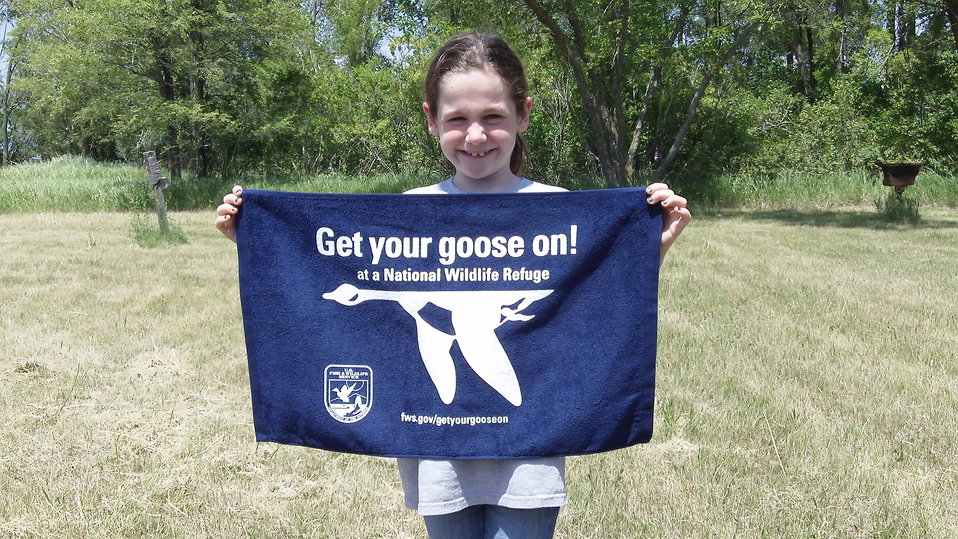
Get Your Goose On!

Photo taken at Huron Wetland Management District in east-central South Dakota.